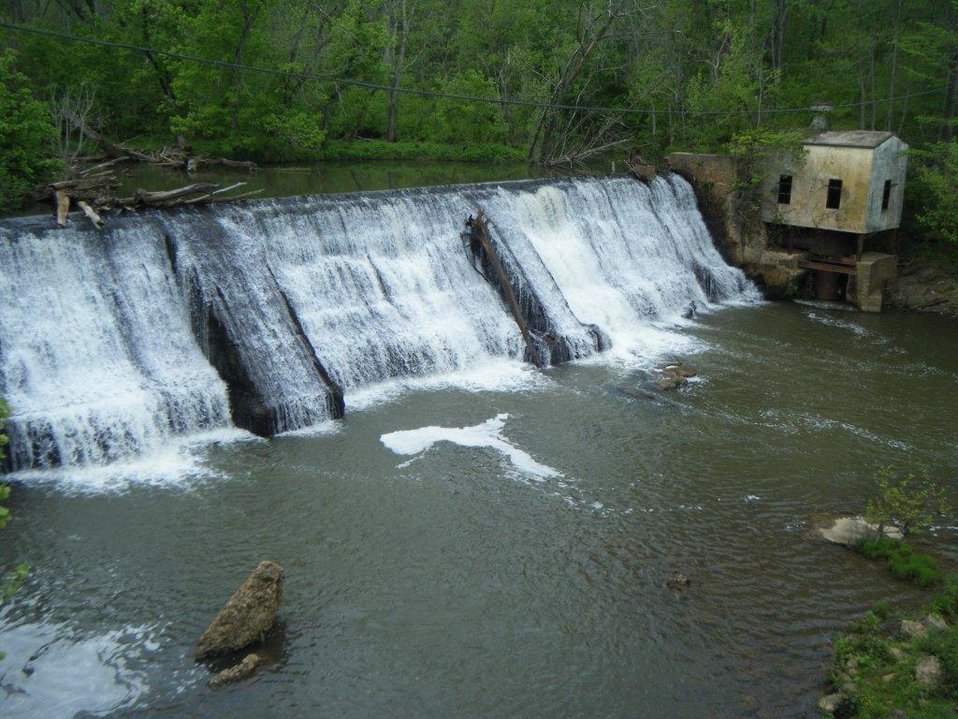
Power Dam and Associated Building

Power Dam and its associated building on the Pigg River just outside the Town of Rocky Mount in Franklin County, Virginia.